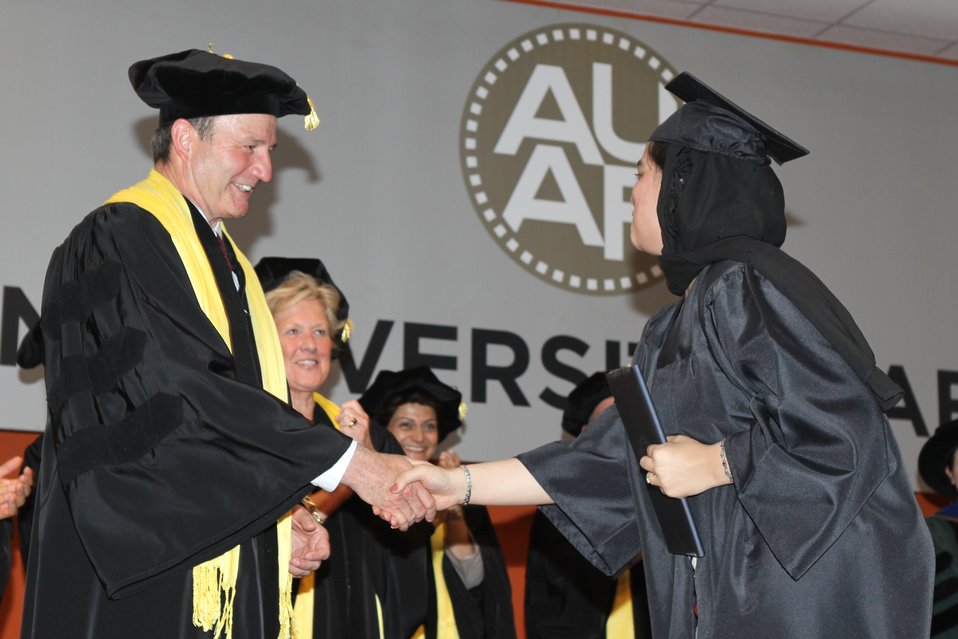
100526 AUAF Graduation 289